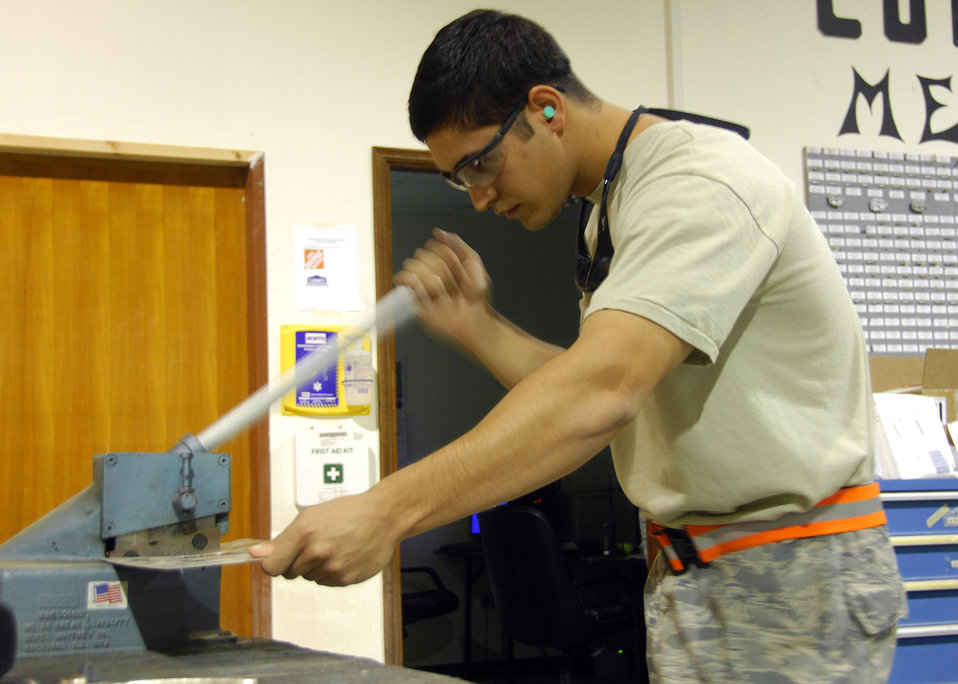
Combat metals

Senior Airman Albert Pagan cuts out a flush patch for an aircraft repair Sept. 17 at an air base in Southwest Asia. Members of the combat metals shop perform aircraft sheet metal fabrication, structural repairs and modifications for aircraft. Airman Chang is is assigned to the 386th Expeditionary Maintenance Squadron combat metals section and deployed from Yokota Air Base, Japan.